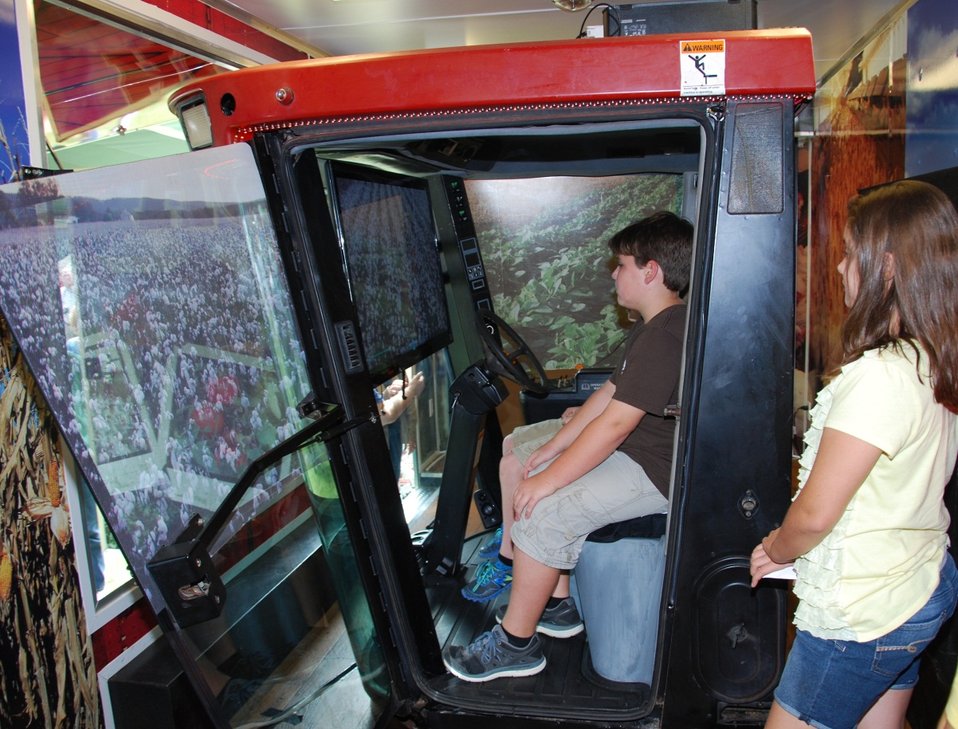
Ag In Action 1

Alabama students “harvest” cotton in the Ag in Action trailer. Many partners, including the U.S. Department of Agriculture's (USDA) Natural Resource Conservation Service (NRCS) helped create the Ag in Action trailer, a traveling environmental education tool in Alabama. NRCS photo.NRCS photo.